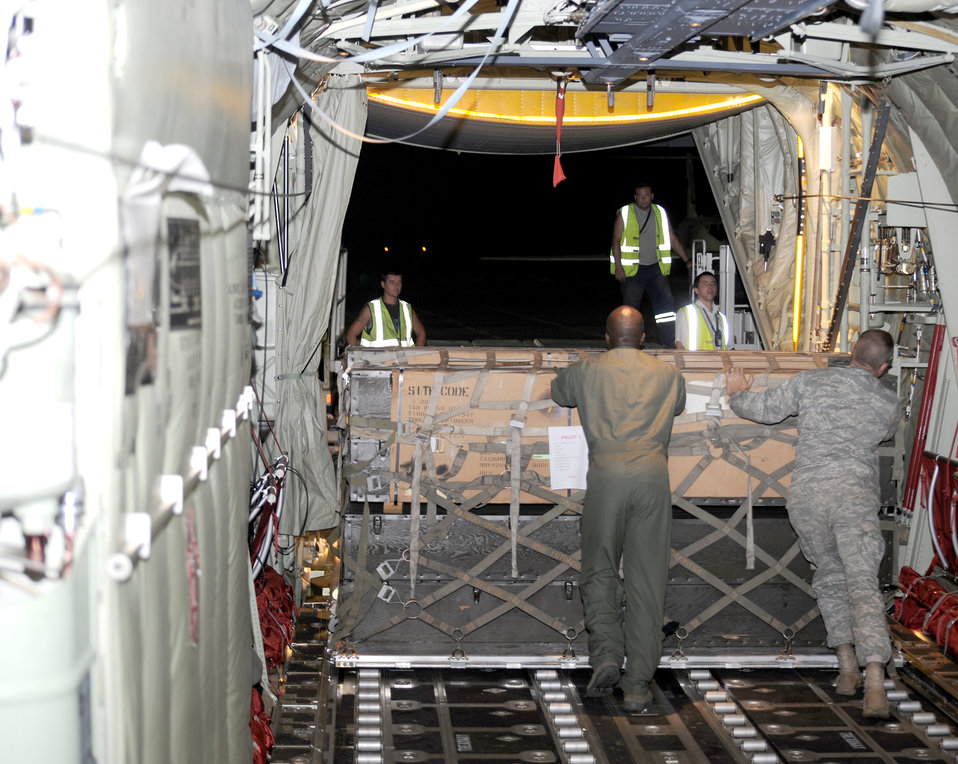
Ramstein Airmen, C-130s deliver supplies to Russia

Military members download firefighting and humanitarian supplies from a C-130J Super Hercules in Moscow Aug. 14, 2010. The supplies are being delivered to Moscow after an official request from the Russian government to the U.S. and at the request of the Department of State, the Department of Defense directed U.S. European Command officials to provide valuable firefighting equipment that includes; firefighting protective equipment and tools to help Russia combat the ongoing wildfires. The military members are assigned to the 37th Airlift Squadron and U.S. Air Forces in Europe Public Affairs.